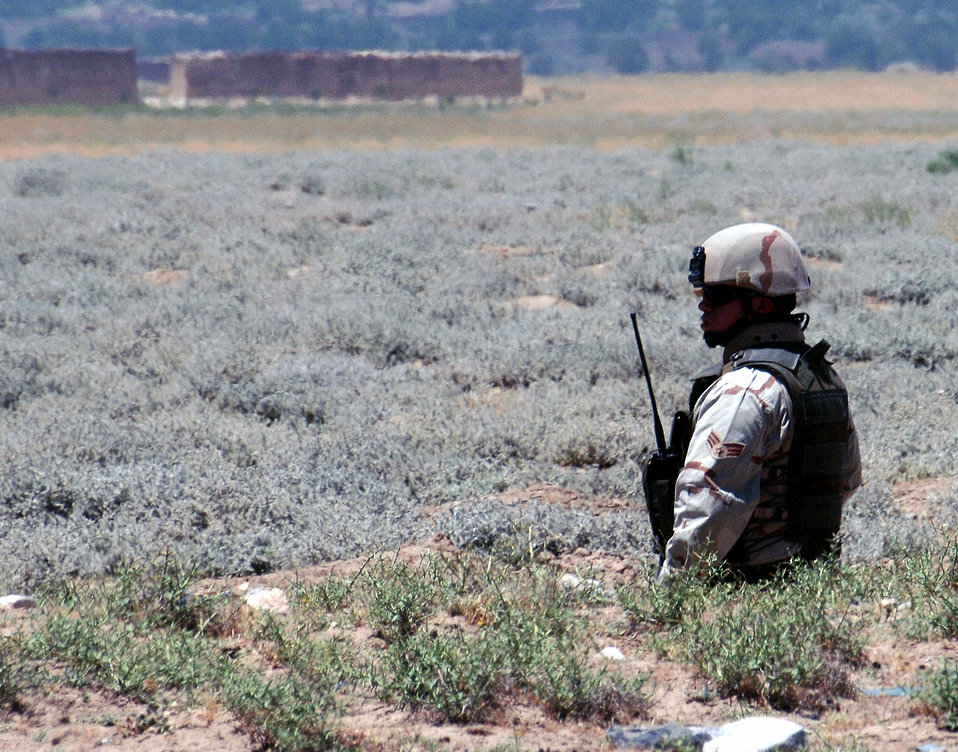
Training for convoy operations

Senior Airman Carlos Moreno keeps a close eye on his field of fire while helping maintain a 360-degree security perimeter around an explosive ordnance disposal team's detonation site June 13 outside Bagram Air Base, Afghanistan. Airman Moreno, with the 455th Expeditionary Security Forces Squadron, is deployed from Vandenberg Air Force Base, Calif.